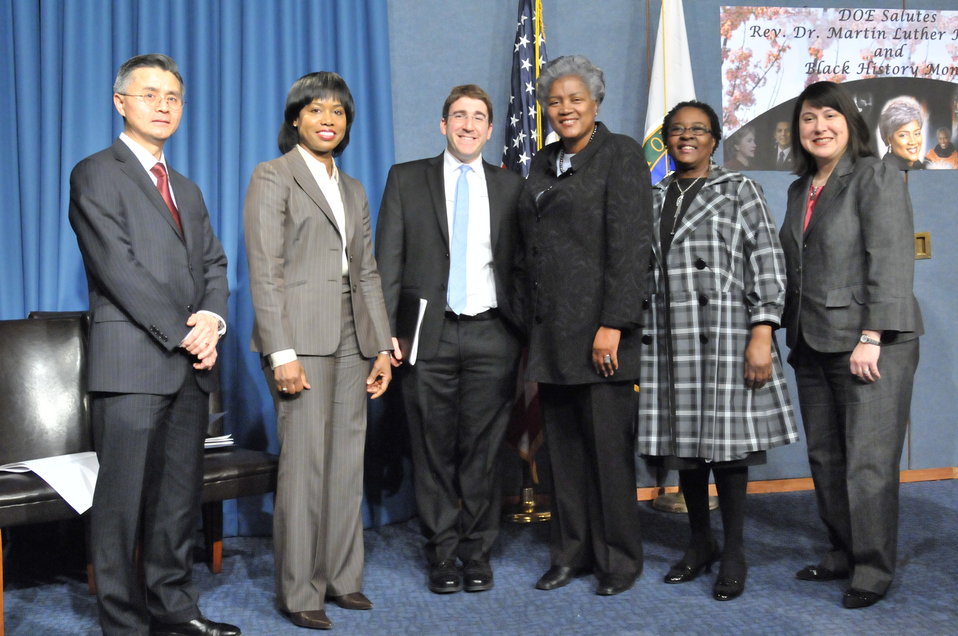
DEPARTMENT OF ENERGY -MARTIN LUTHER KING / BLACK HISTORY MONTH COMMEMORATIVE PROGRAM WITH DOE SECRETARY E. MONIZ IN ATTENDANCE